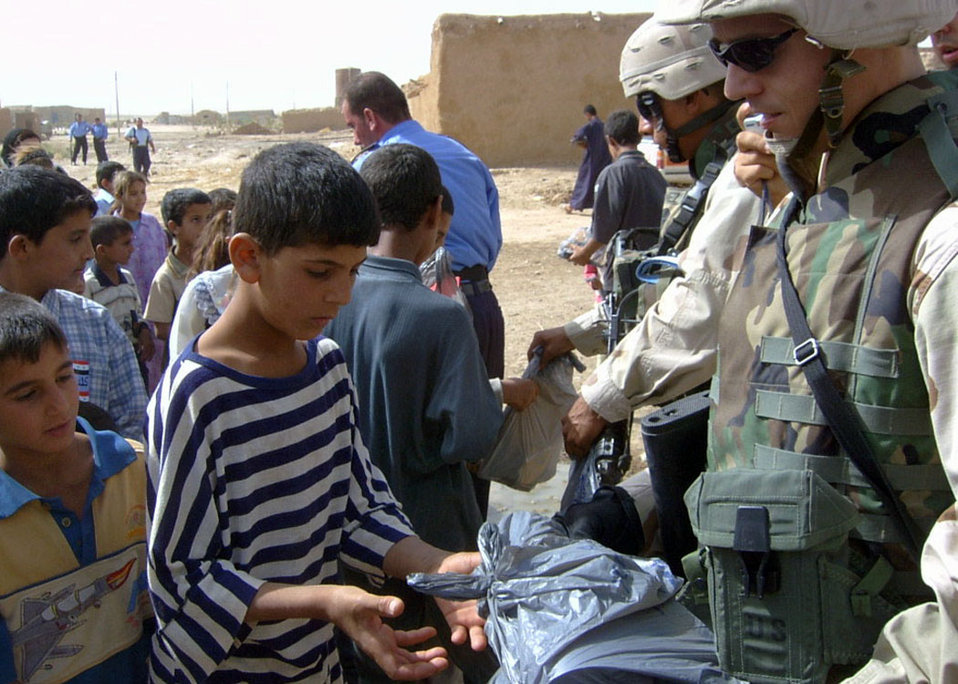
Operation School Supplies

Soldiers with the Army civil affairs unit at Kirkuk Air Base, Iraq, hand out school supply packets to Iraqi school children. More than 65 volunteers from the base assembled about 9,000 packets of school supplies.